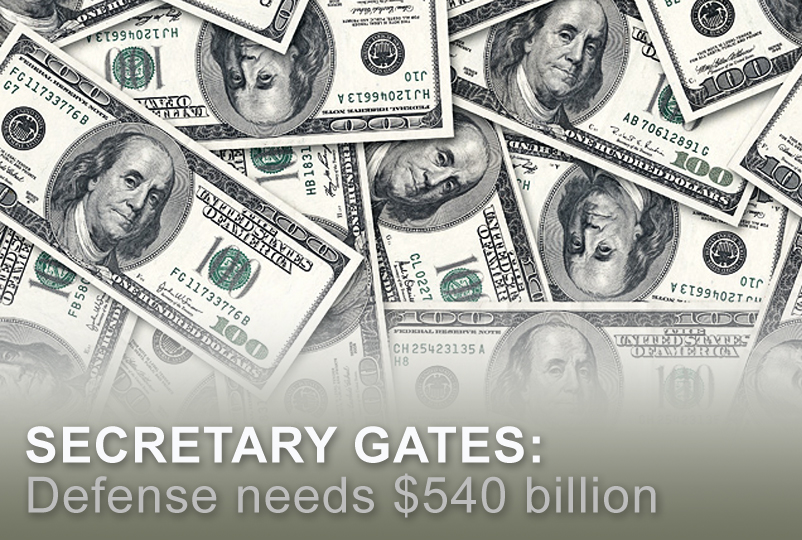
Secretary Gates: Defense needs $540 billion